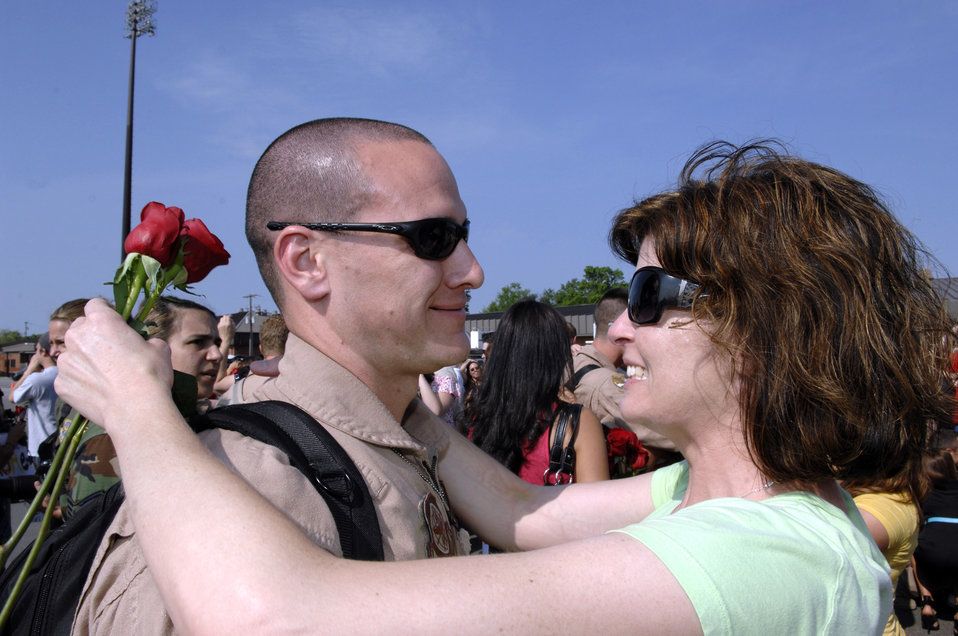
Mission complete: Charleston Airmen return home

Master Sgt. Kevin Kloeppel reunites with wife, Alison, May 3 at Charleston Air Force Base, S.C. More than 140 Airmen from the 16th Airlift Squadron returned from their 120-day deployment to the Middle East supporting operations Enduring Freedom and Iraqi Freedom and operations in the Horn of Africa. While deployed, the 16th AS executed 142 airdrops that resupplied servicemembers serving in the regions with 3.7 million pounds of supplies. Sergeant Kloeppel is a loadmaster for the 16th AS.